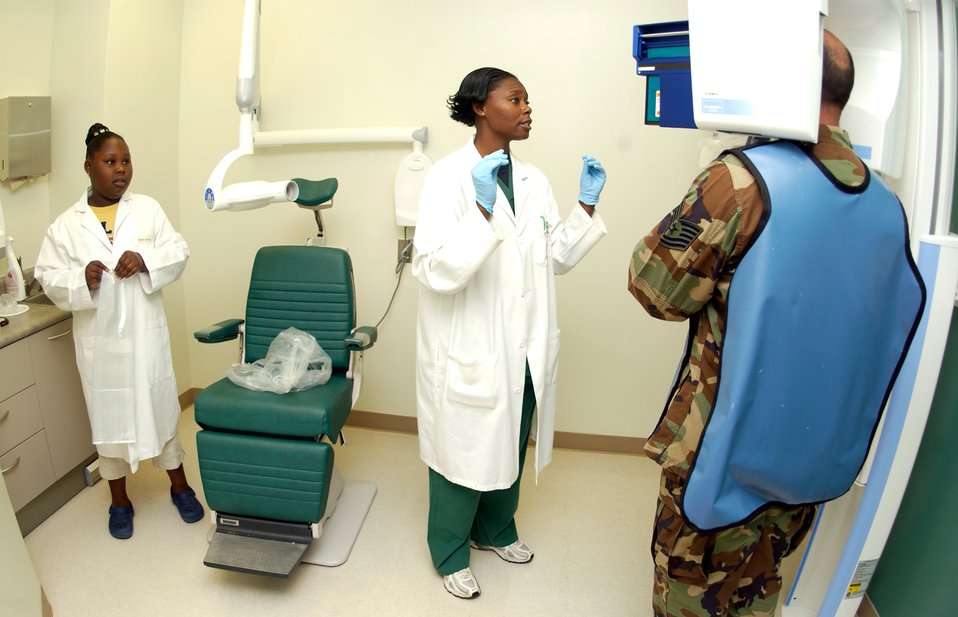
Andersen small dental clinic of the year

Tech. Sgt. Rebecca Nelson takes X-rays of a patient's teeth as her daughter Adrienne McCall, 10, watches on take your child to work day Feb. 6. Sergeant Nelson is a 36th Medical Operations Squadron NCOIC of clinical dentistry.